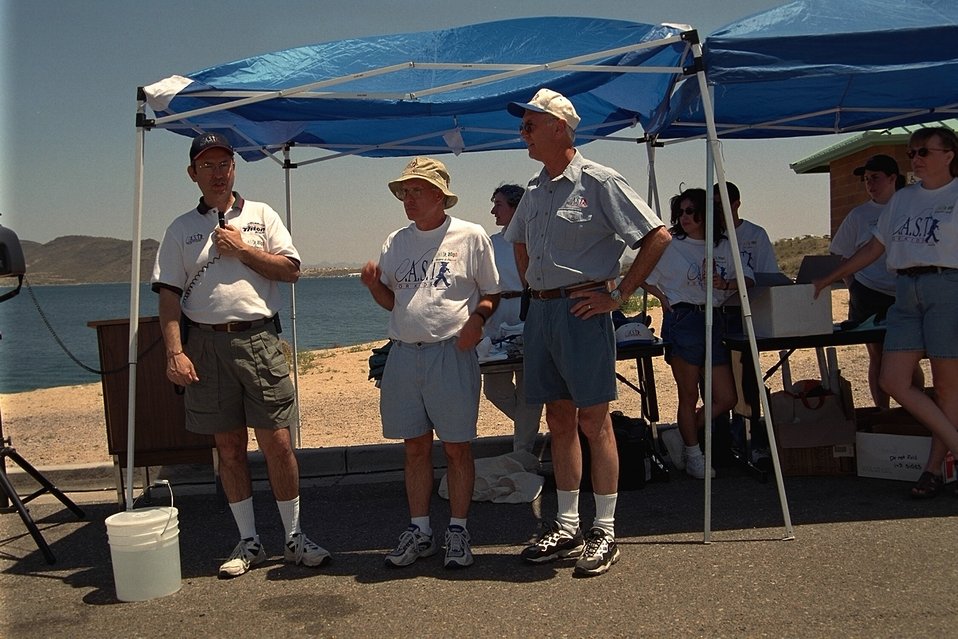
Everyone has a great time at Catch A Special Thrill (CAST), a day of fishing at Lake Pleasant for disabled children.